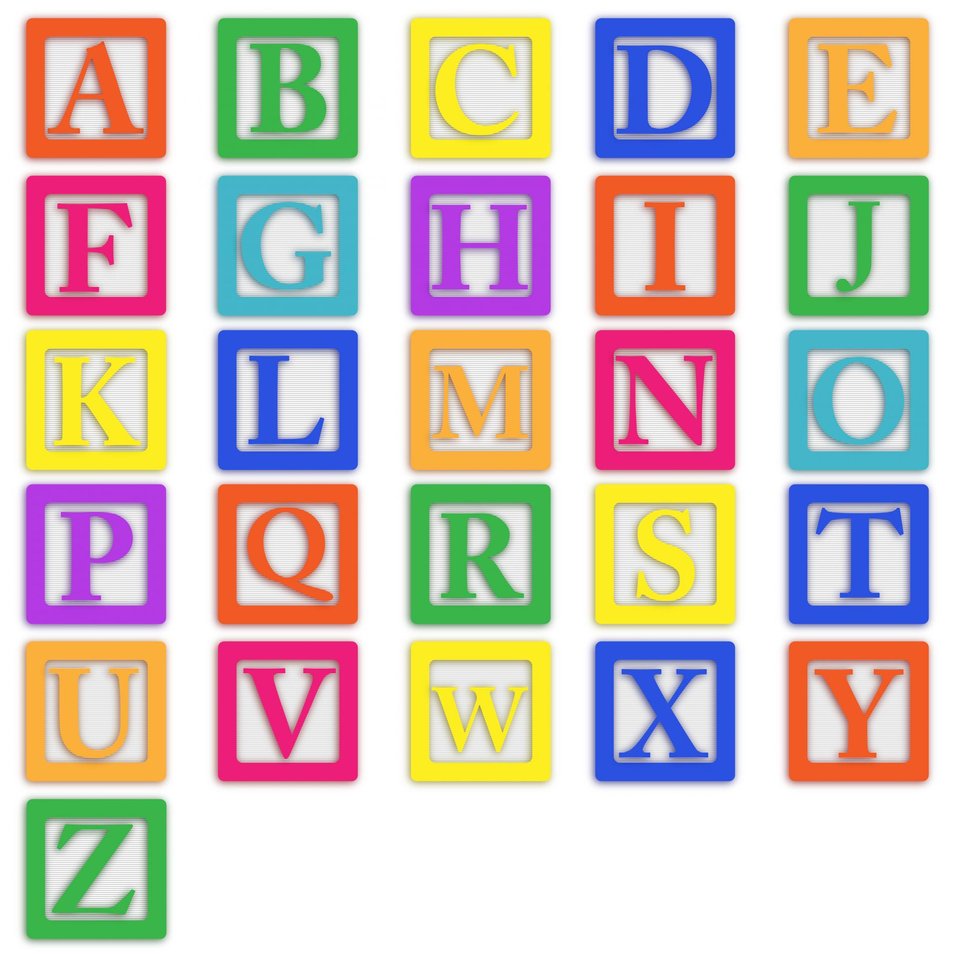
Baby blocks letters

Baby blocks colorful alphabet letters clip-art for scrapbooking.